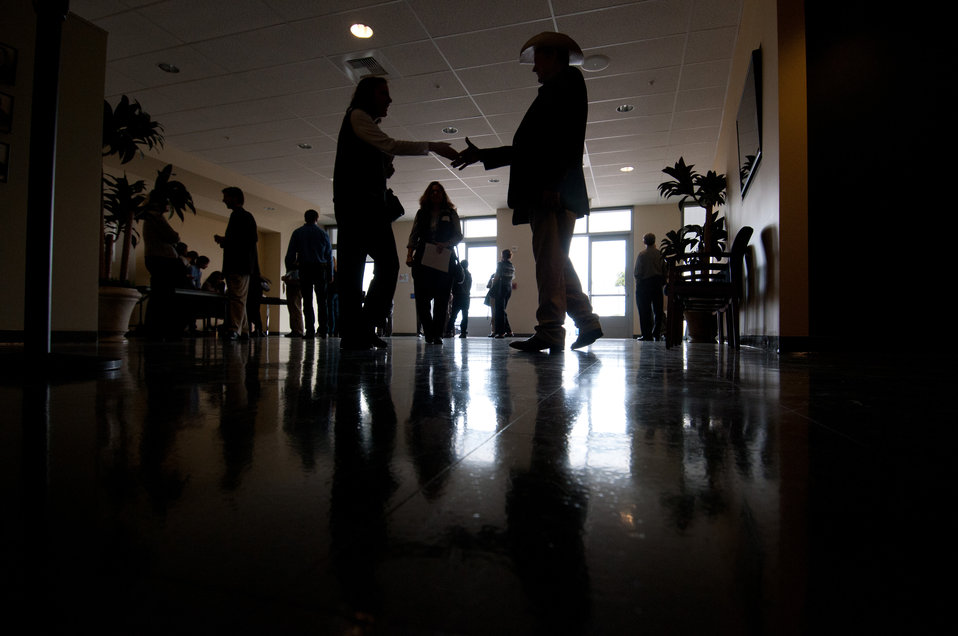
U.S. Department of Agriculture (USDA) Natural Resources Conservation Service State Conservationist Ed Burton welcomes a participant to the America’s Great Outdoors Initiative (AGO) Monterey Bay Pilot Area Focus Session in the City of Watsonville’s Civic Plaza in California, on Friday, June 17, 2011.